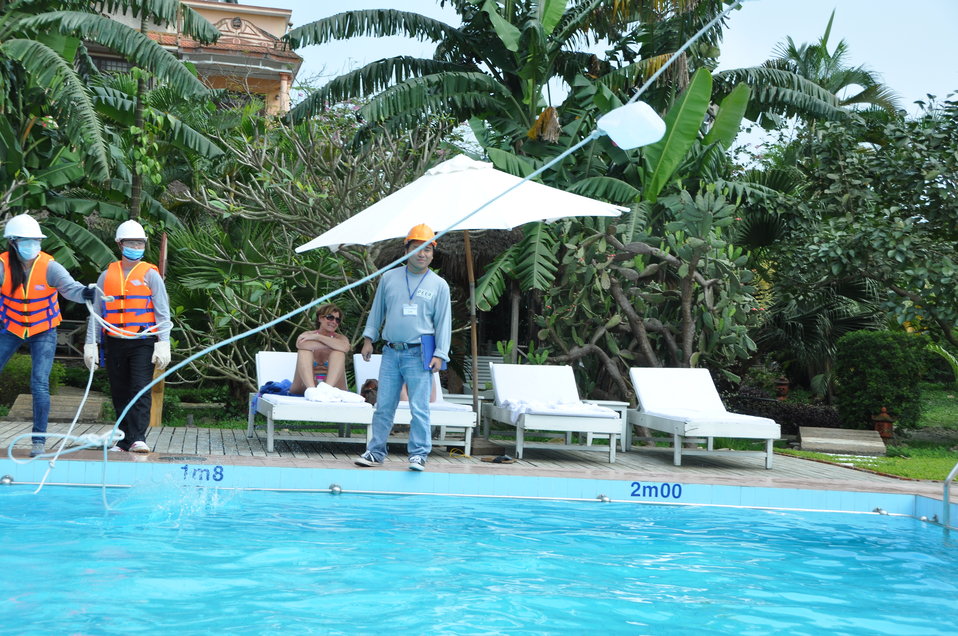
Disaster and Emergency Training Funded by USAID in Hue, Vietnam